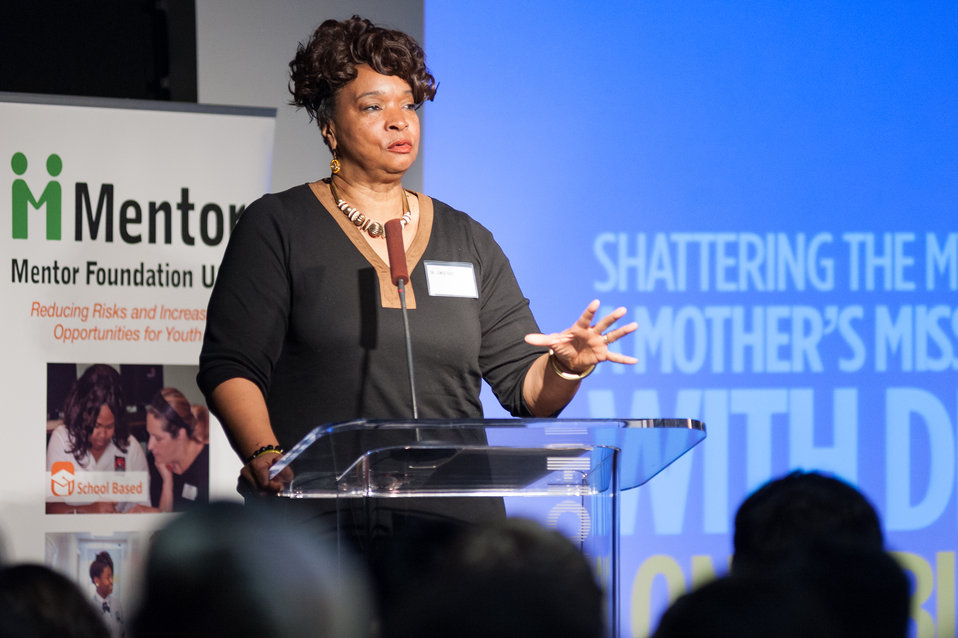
Mentor NDFW Event 2014

Mentor Foundation USA, in partnership with the National Institute on Drug Abuse (NIDA) and other key partners hosted a Youth Drug Facts Rally at the House of Sweden on Thursday, 30th January 2014. Guest Speaker Dr. Lonise Bias presented to approximately 200 students from five local high schools attended and had the opportunity to interact with top U.S. scientific experts and inspiring guest speakers to “shatter the myths” about drugs and substance abuse, while pledging to stay drug-free.